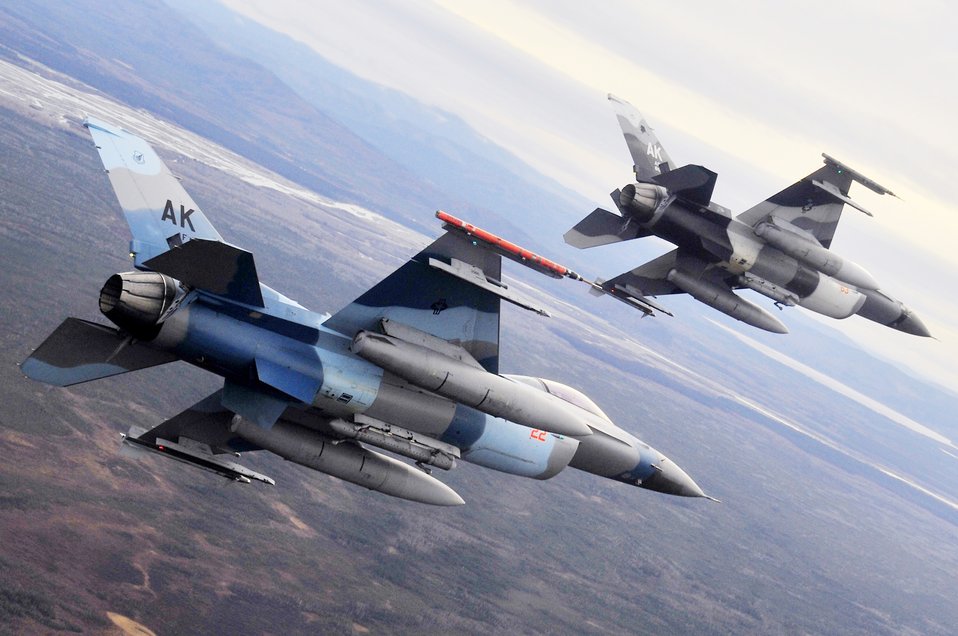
Looking for a 'fight'

F-16 Fighting Falcon